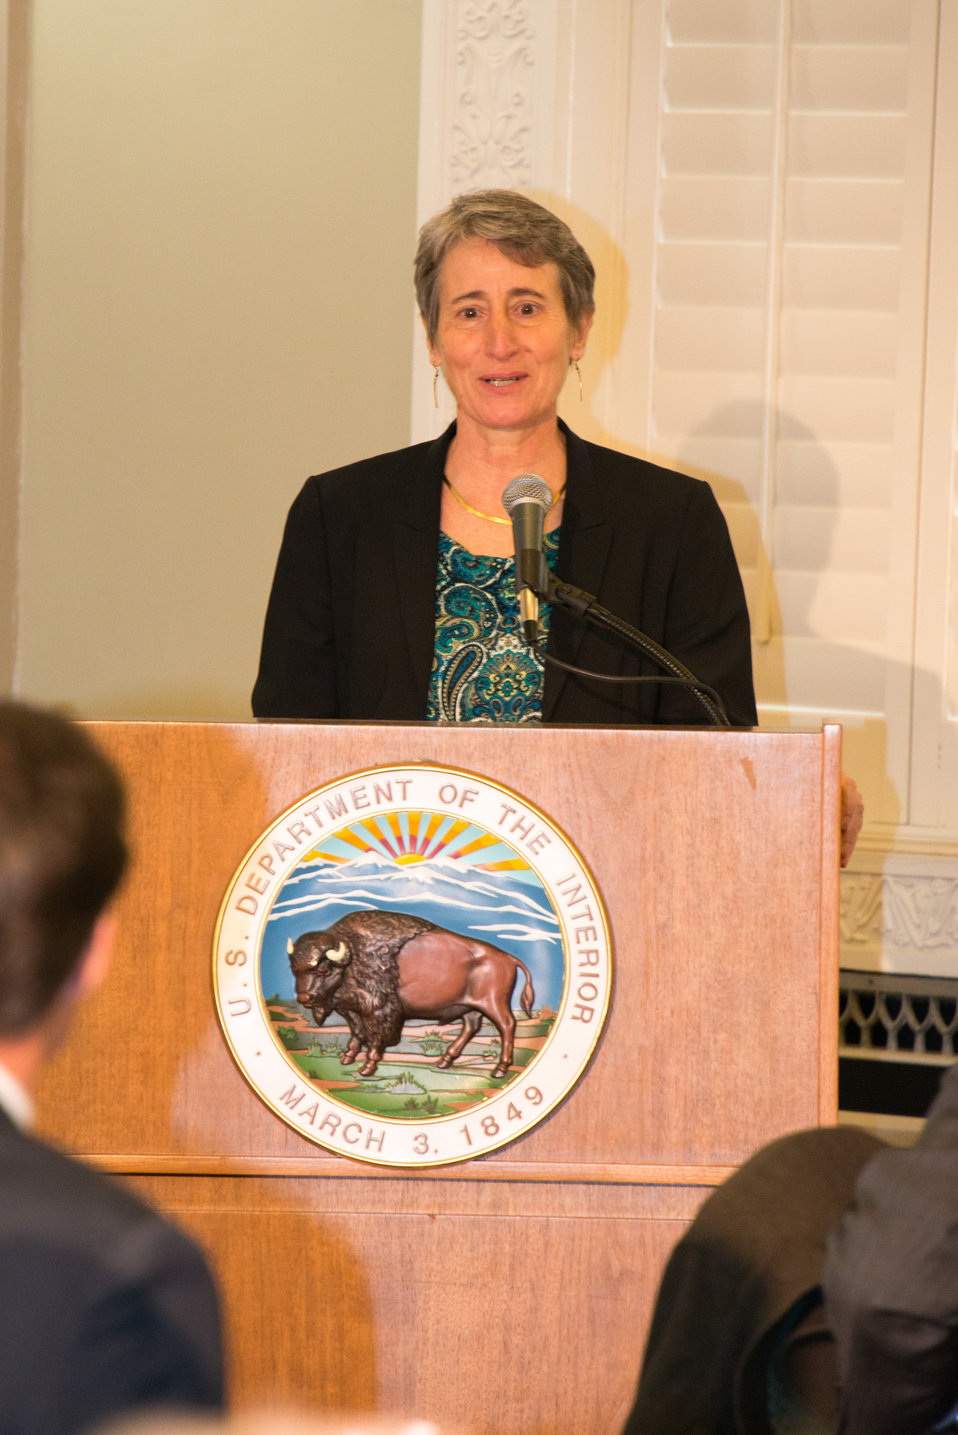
Public Meeting of Advisory Council on Wildlife Trafficking

Secretary of the Interior Sally Jewell addresses the Advisory Council on Wildlife Trafficking and attendees of the public meeting